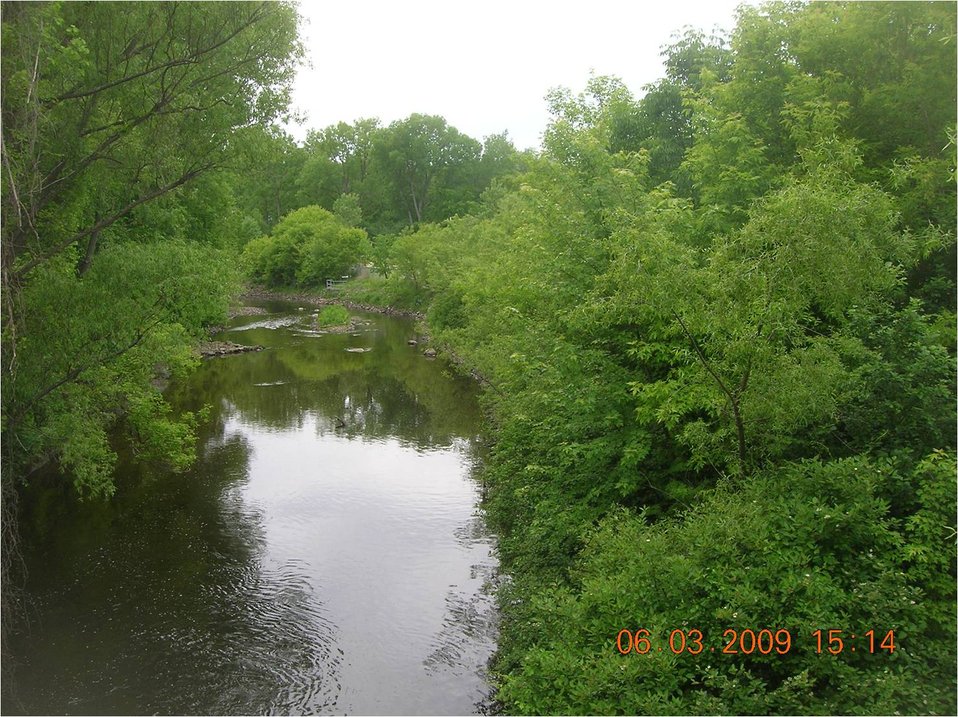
(Earlier photo) June 2009, 10 Years Later, 'AFTER' view from Newell Street

10 years after cleanup shows significant regrowth of native species.